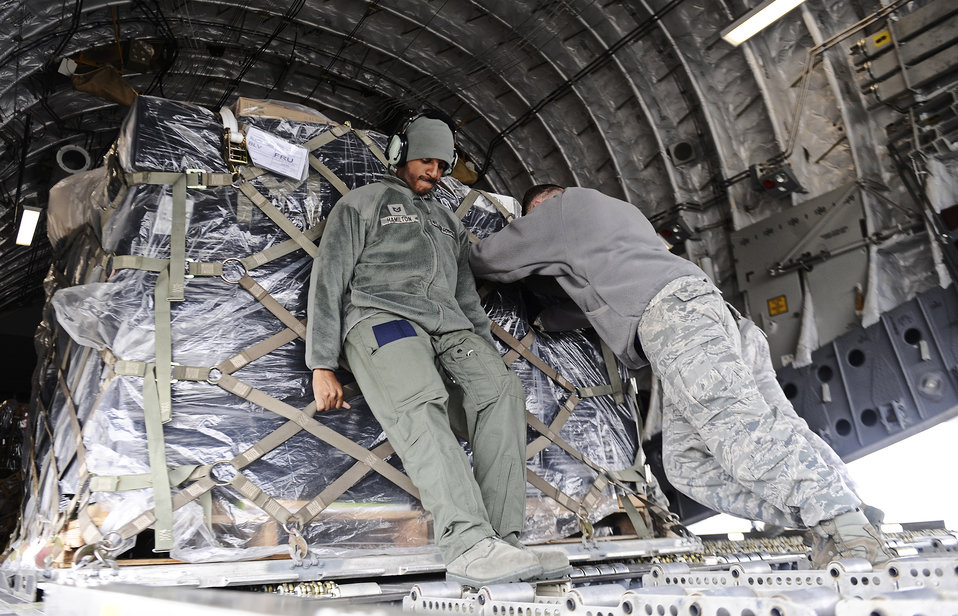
Humanitarian aid

Tech Sgt. Matthew Hamilton helps members of the 375th Logistics Readiness Squadron push a 500-pound pallet onto a C-17 Globemaster III Feb. 7, 2011, at Scott Air Force Base, Ill. Sergeant Hamilton is a loadmaster assigned to the 452nd Air Mobility Wing.